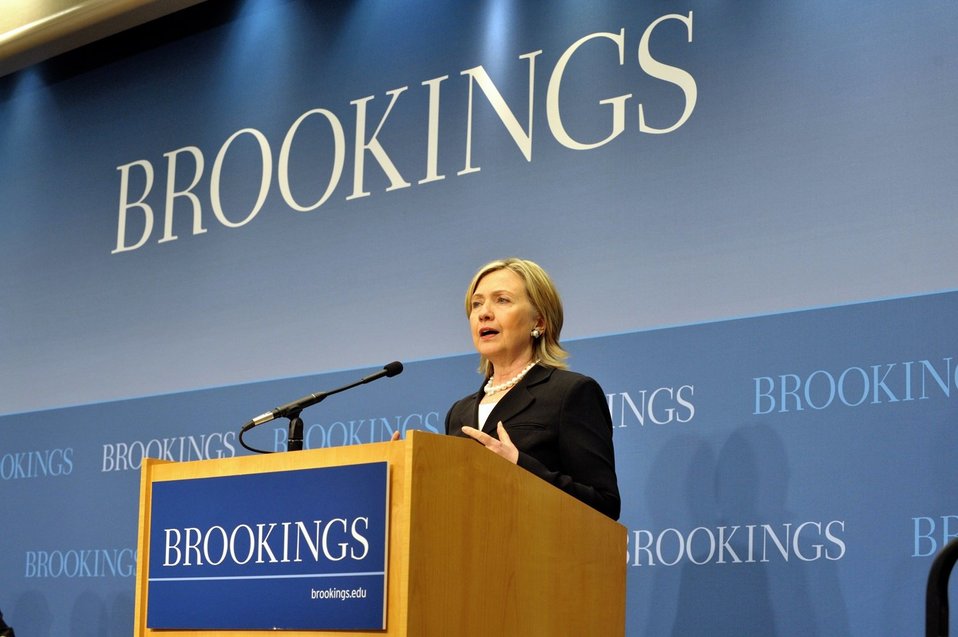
Secretary Clinton Delivers Remarks at the Brookings Institute

U.S. Secretary of State Hillary Rodham Clinton delivers remarks on the Obama Administration's National Security Strategy at the Brookings Institute on May 27, 2010, in Washington, D.C.